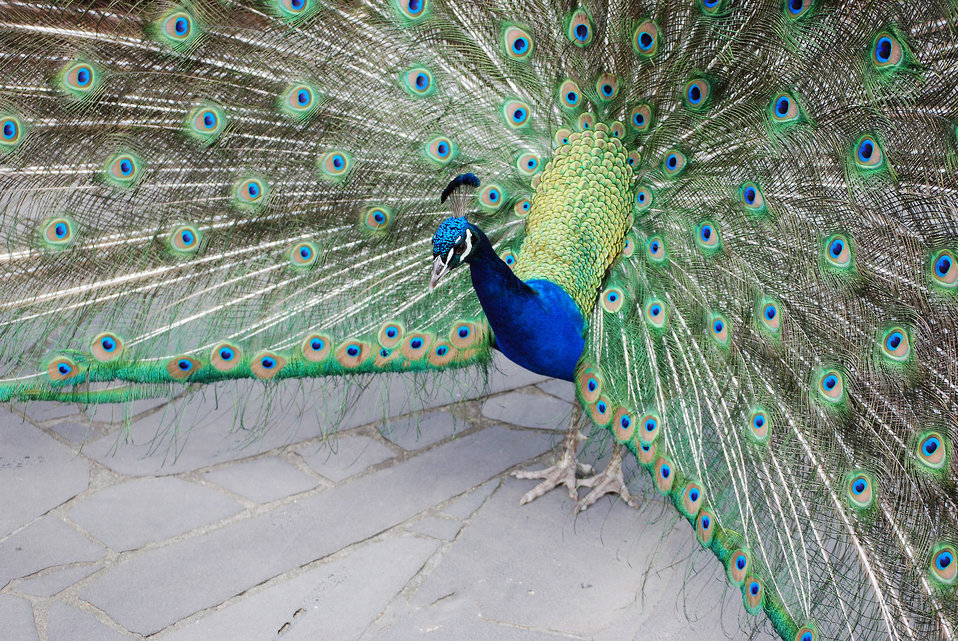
Peacock with full display.